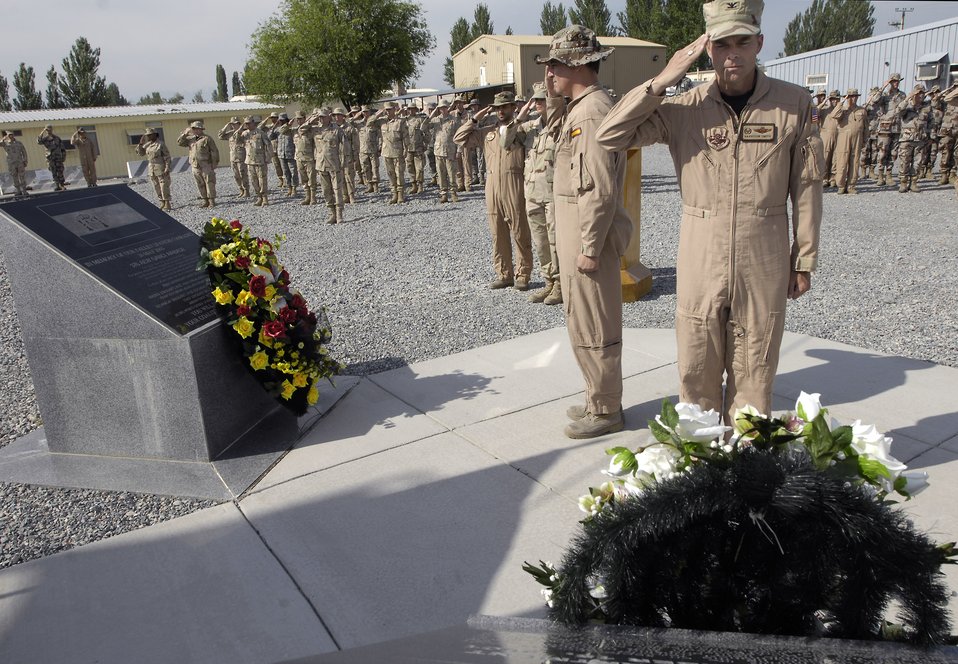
Manas AB Coalition team pauses to remember the fallen

Col. Harrison Smith and Maj. Santiago Ibarreta lead the men and women of the 376th AEW and coalition team in remembering the fallen during a May 26 Memorial Day ceremony. The Manas AB coalition also paused to honor the fallen Spanish airmen and soldiers which marked the five year anniversary of 62 Spanish servicemembers lost in a 2003 commercial contract plane crash in Turkey. Colonel Smith is the 376th Air Expeditionary Wing commander and Major Ibarreta is the Spanish Air Force Mizar detachment commander at Manas Air Base, Kyrgyz Republic.